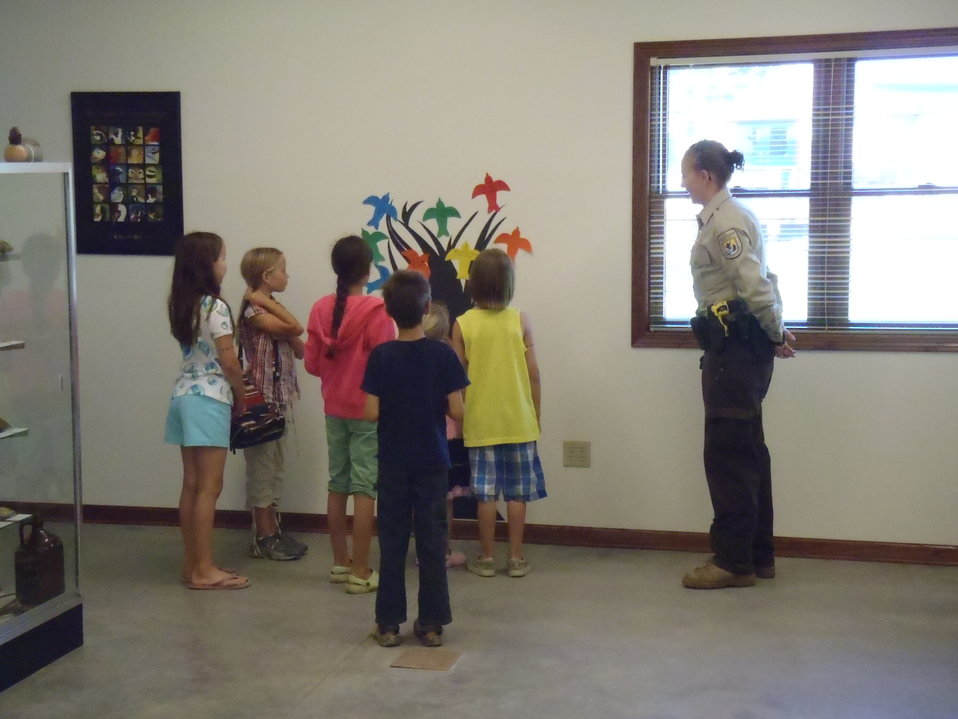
International Migratory Bird Day 2012

Marais des Cygnes National Wildife Refuge